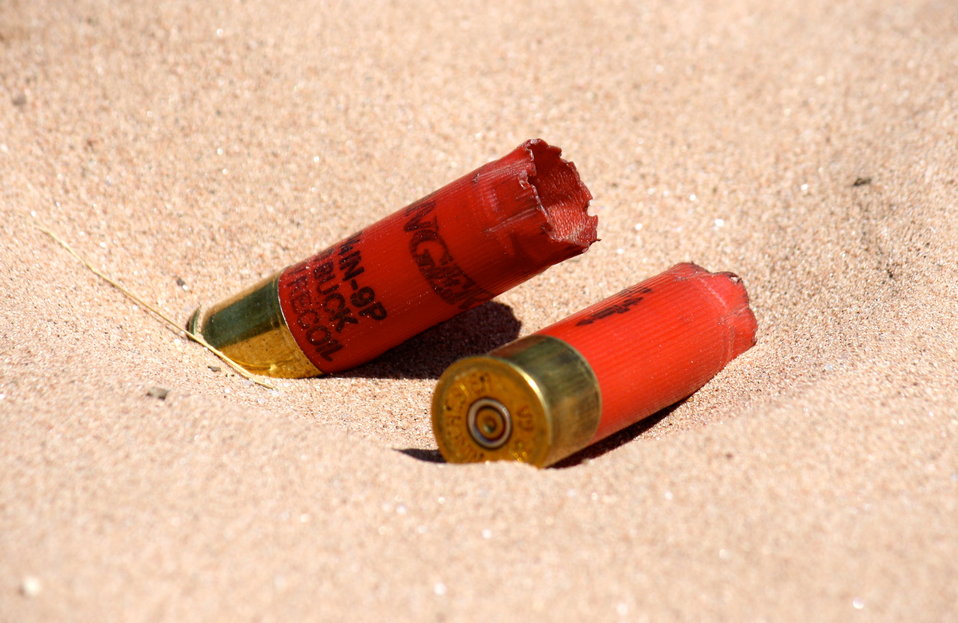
Shotgun Shells

Law Enforcement target practice at outdoor shooting range in Glastonbury, CT.